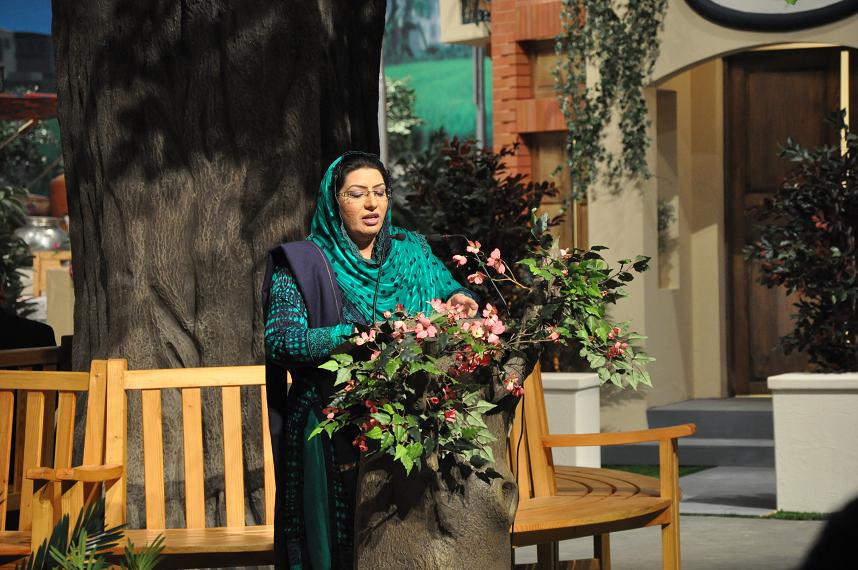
Dr. Firdous Ashiq Awan (Minister for Information and Broadcasting)